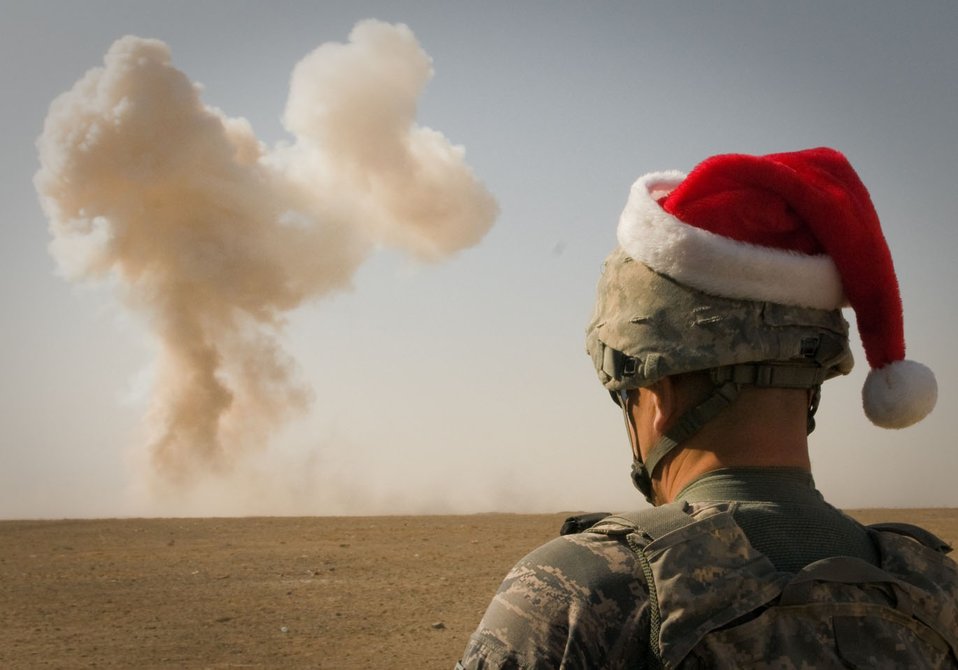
Explosive Santa

Tech. Sgt. Robert L. Woods watches a detonation of homemade explosives and expired ammunition Dec. 22, 2010, outside Kandahar Airfield, Afghanistan. He is the Explosive Ordnance Disposal team leader with the 466th Air Expeditionary Group and his home unit is the 123rd Airlift Wing in Louisville, Ky.